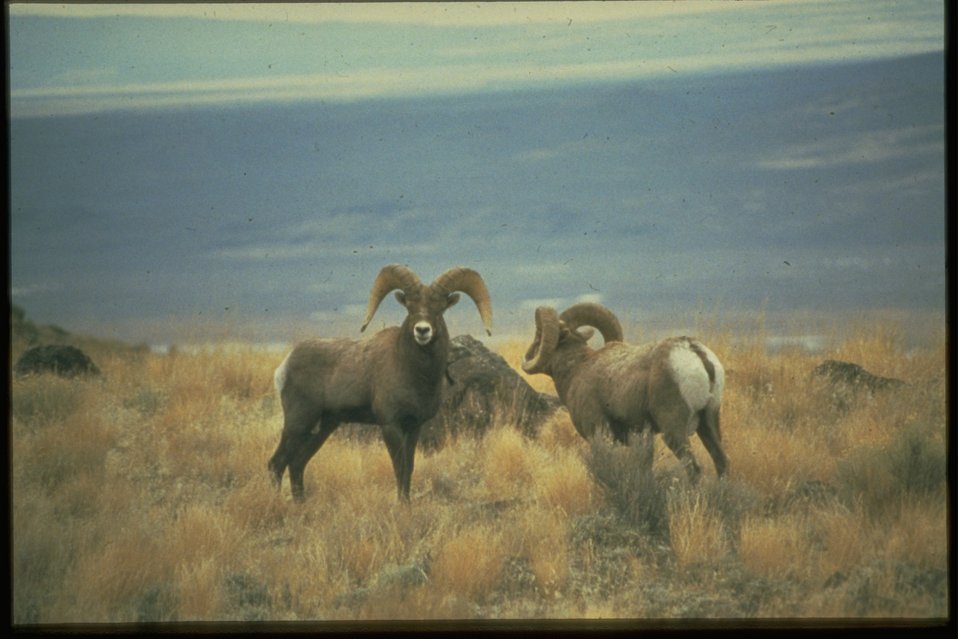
Two Bighorn Sheep standing in a field.